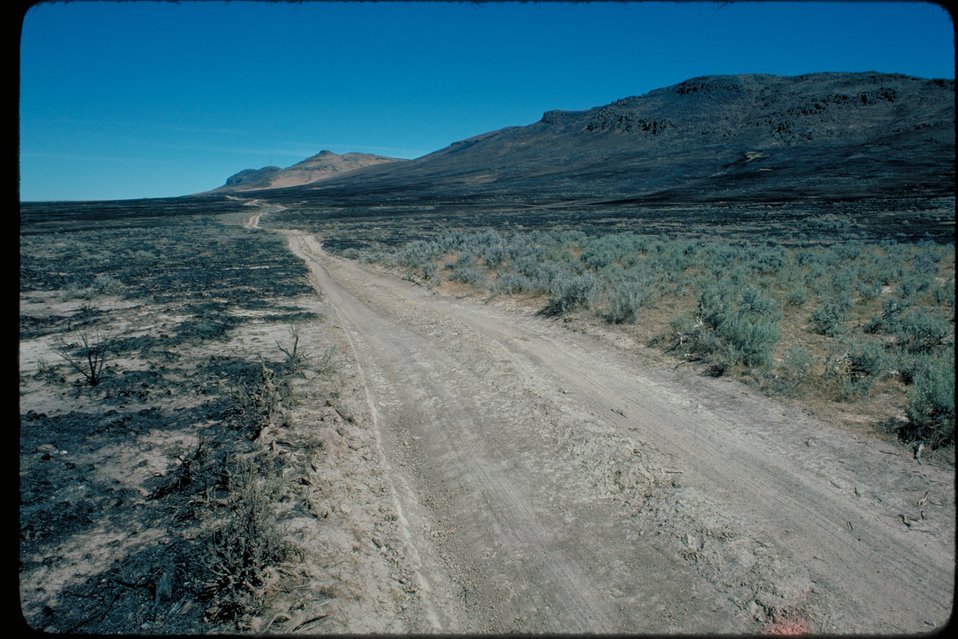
Oregon Trail near Mountain Home Lower Snake River District